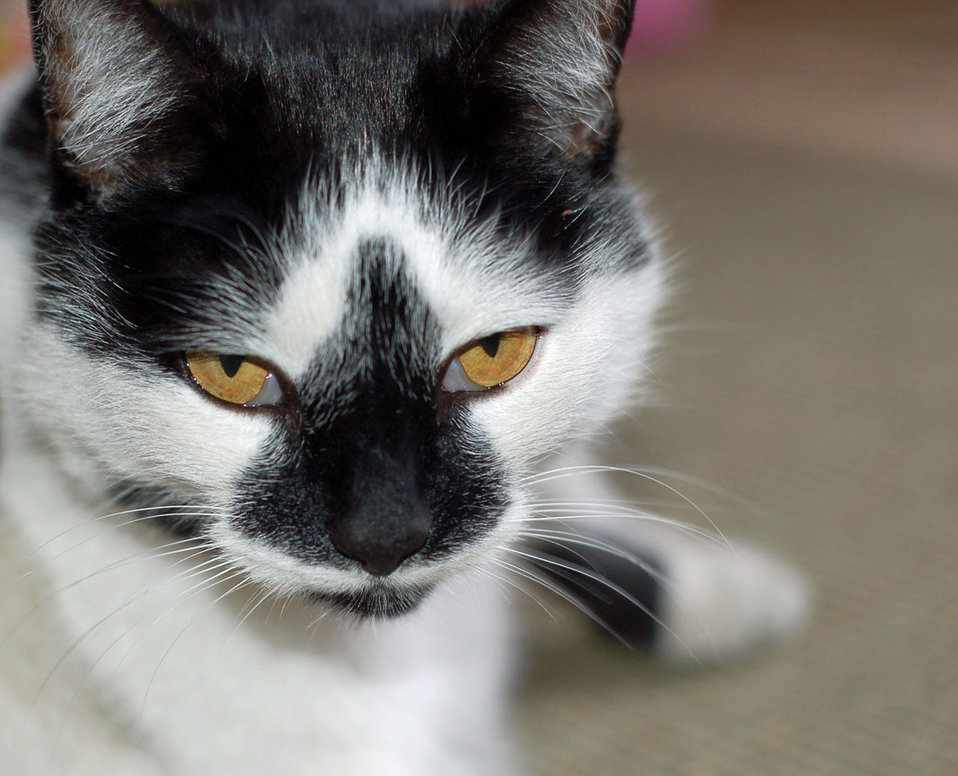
Black and white cat with amber coloured eyes - portrait.